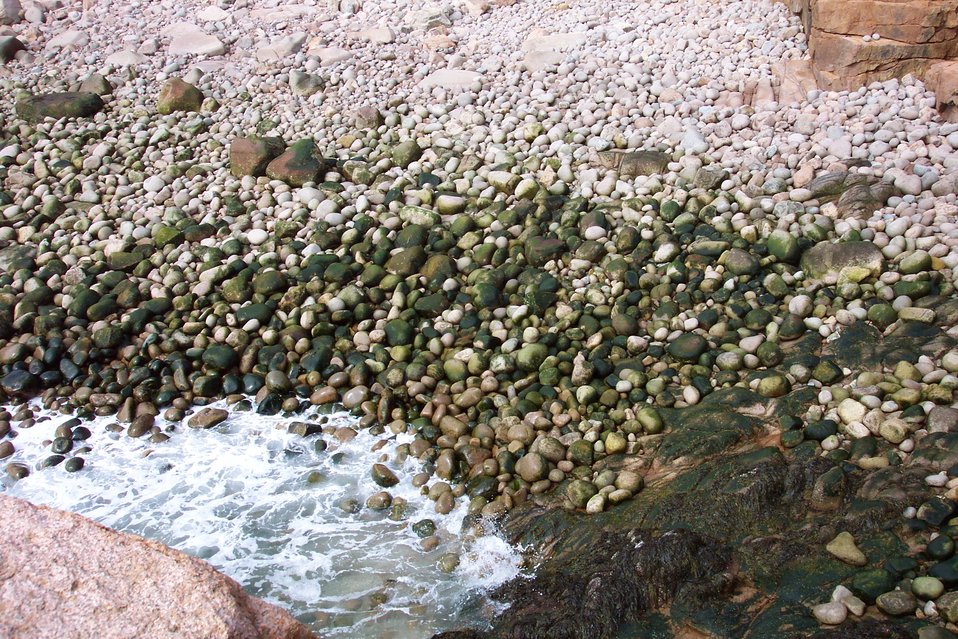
A 'big' sand beach encountered on the way to Otter Cliffs. Photo #2 of sequence.